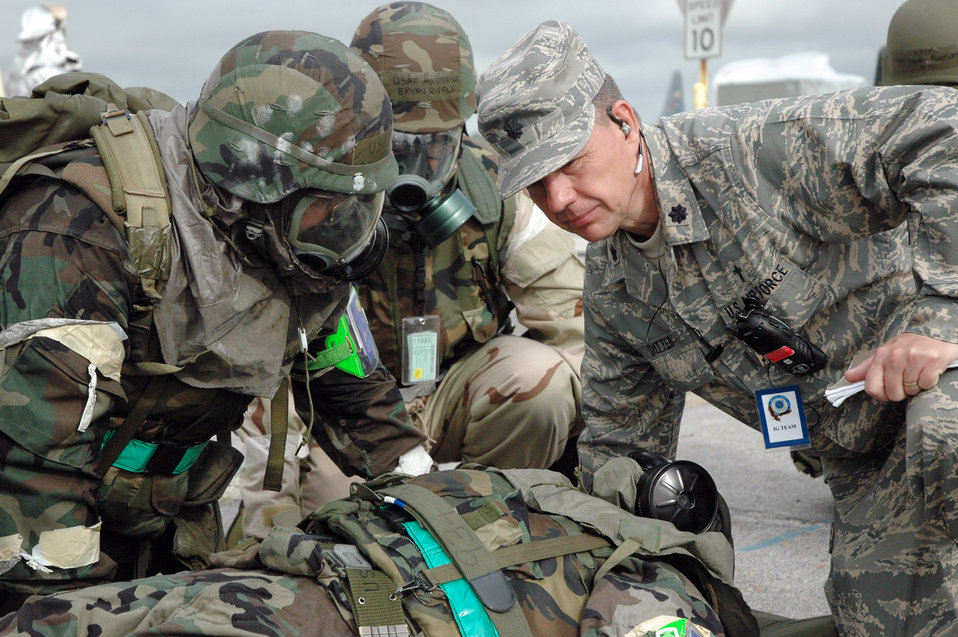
The next step

Chaplain (Lt. Col.) John Ditter (right) inspects buddy care during an operational readiness inspection at the training center in Gulfport, Miss. Chaplain Ditter is the Air Mobility Command staff chaplain in charge of readiness and evaluation.